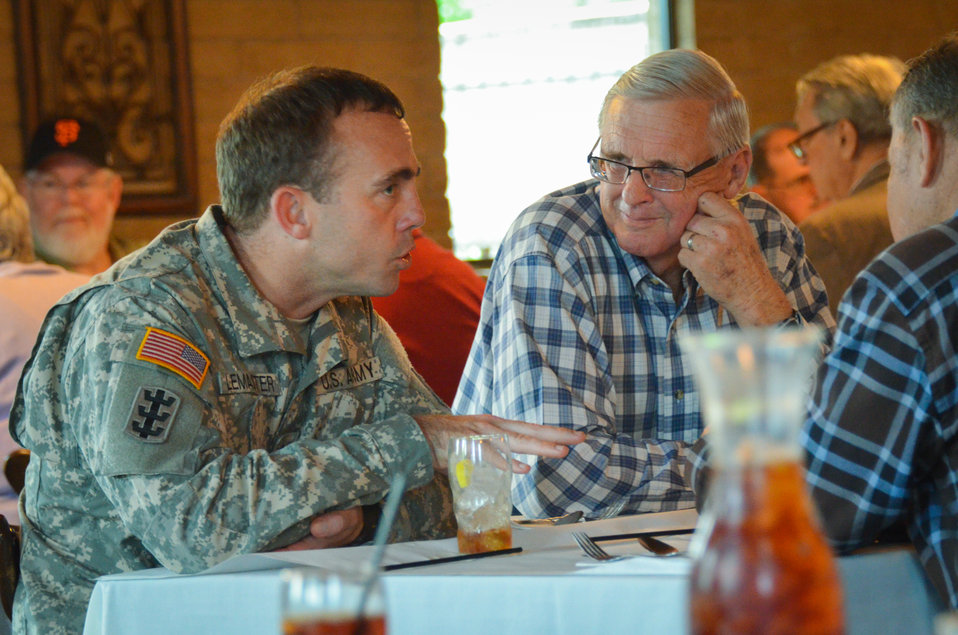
Sacramento District's 33rd annual retiree luncheon

U.S. Army Corps of Engineers Sacramento District deputy commander Lt. Col. Braden LeMaster (left) speaks with Lew Whitney (second from left) former deputy district engineer for project management and other former employees during the district's 33rd annual retiree luncheon May 20, 2014 in West Sacramento, Calif. LeMaster visited with many of the of 36 attending retirees and spoke about the district's ongoing civil and military projects.